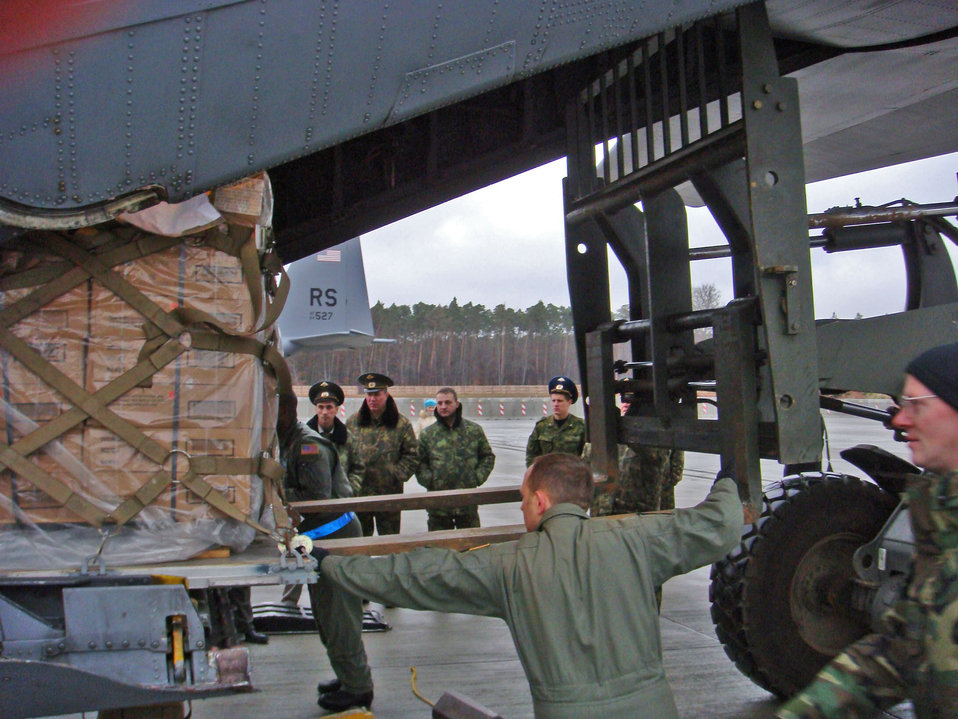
USAFE program builds partnerships, opens lines of communications

Airmen from the 86th Airlift Wing demonstrate C-130 Hercules uploading operations with visiting Russian Air Force delegation members in November at Ramstein Air Base., Germany.